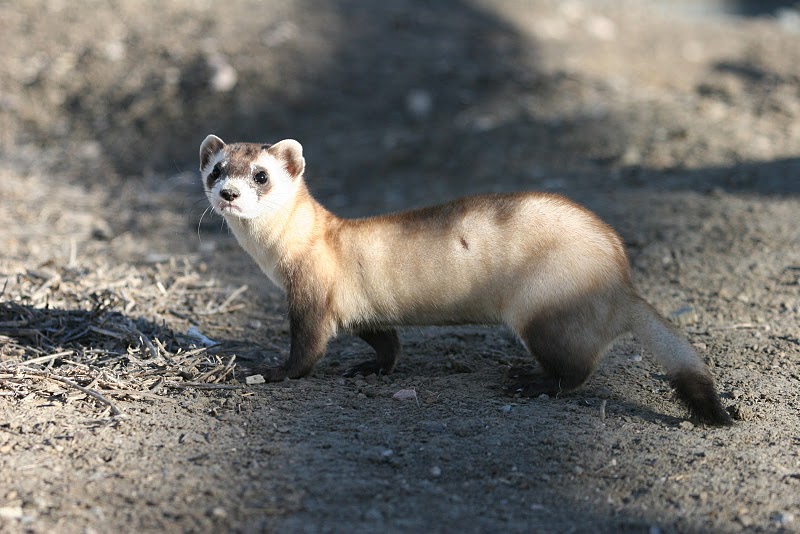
Black-footed Ferret